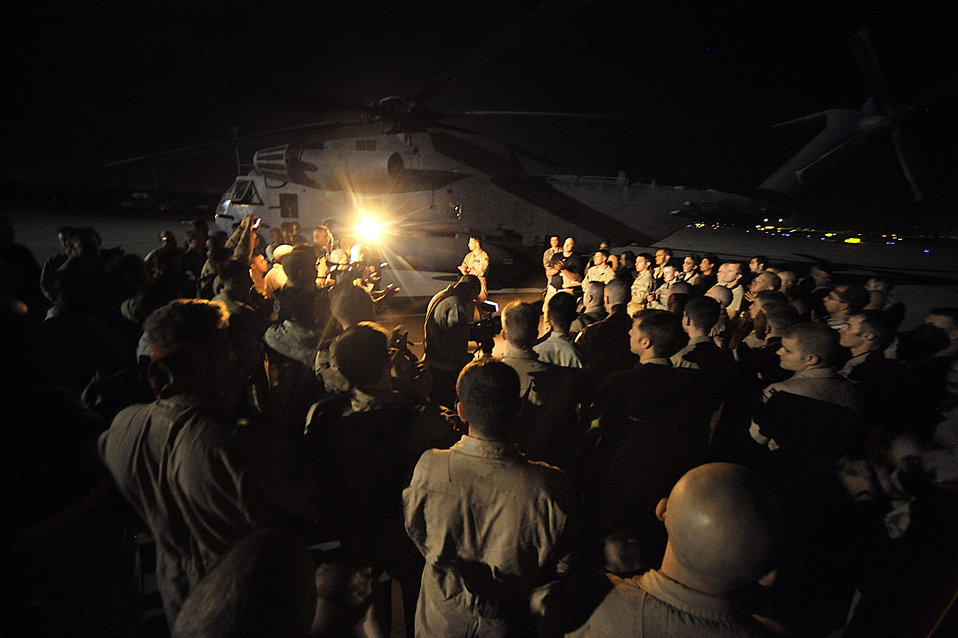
MH-53s fly final combat missions

Lt. Col. Gene Becker speaks to the crews and maintainers after the last combat mission of the MH-53 Pave Low Sept. 28 in Iraq. The 20th ESOS MH-53 helicopters and their crews provided much of the vertical lift, direct action and logistical resupply to the Combined Joint Special Operations Task Force in Iraq. Colonel Becker is the 20th Expeditionary Special Operations Squadron commander.